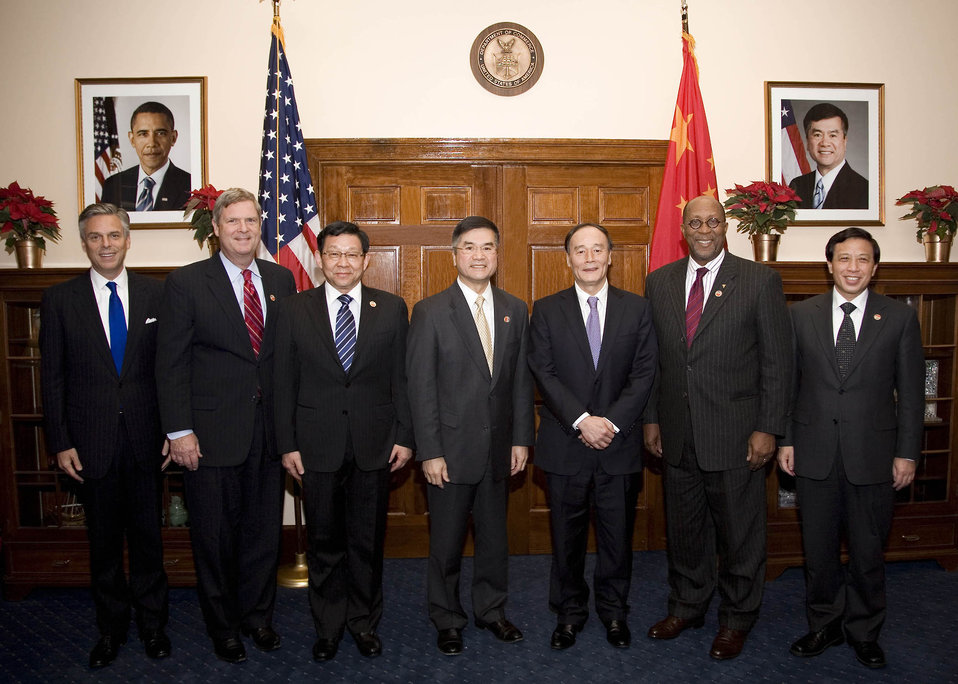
The 21st Session of the U.S. - China Joint Commission on Commerce and Trade (JCCT) co-chairmen at the Commerce Department, in Washington, D.C., on Wednesday, December 15, 2010. (L to R U.S. Ambassador to China Jon Huntsman, Agriculture Secretary Tom Vilsack, Chinese Minister of Commerce Chen Deming, Commerce Secretary Gary Locke, Chinese Vice Premier Wang Qishan, U.S. Trade Representative Ron KIrk, and China's Ambassador to the U.S. Zhang Yesui). USDA photo 10di1573-7776.